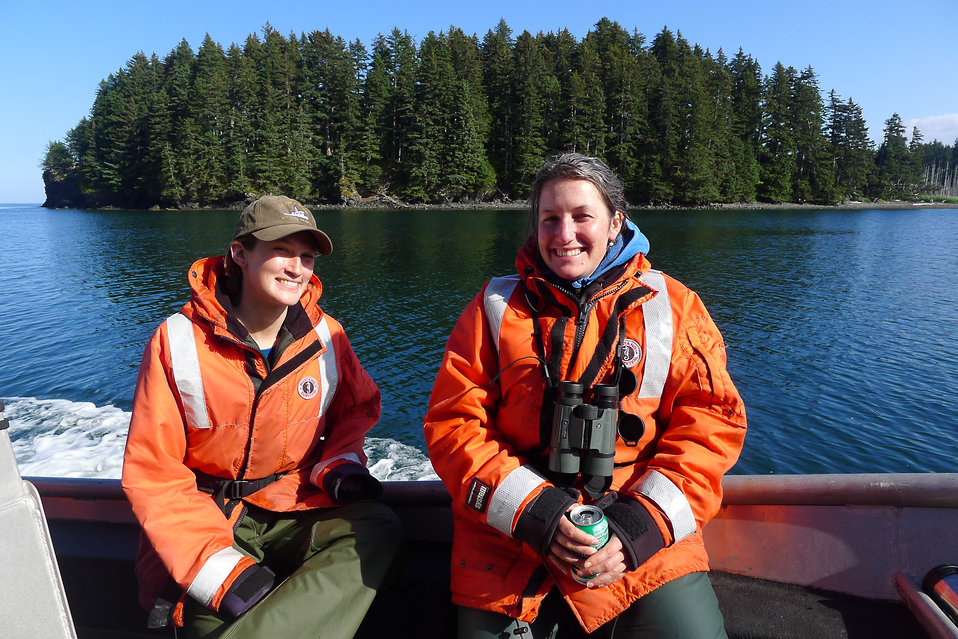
Volunteer avian biologists on the m/v Ursa Major II

Photo Credit: Lisa Hupp/USFWS
Source: Kodiak NWR